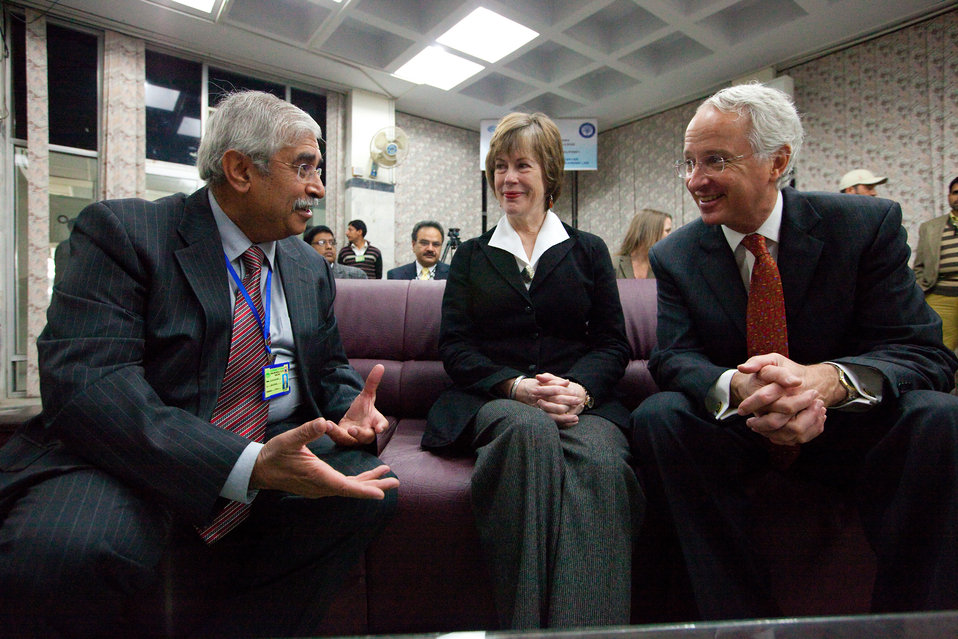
Telemedicine

Rawalpindi, January 5, 2012 – Ambassador Cameron Munter and his wife Dr. Marilyn Wyatt sitting with Dr. Asif Zafar Malik, Project Director Telemedicine/training and other officials.